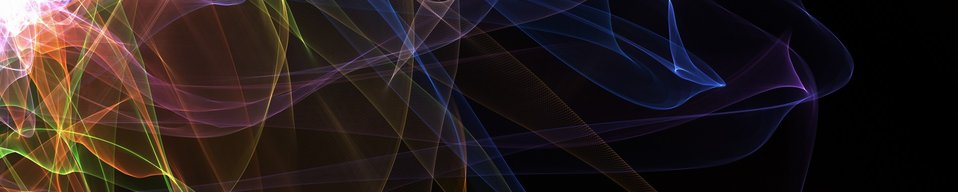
Smokey lace ribbon banner

Digitally created abstract page banner. just add text..